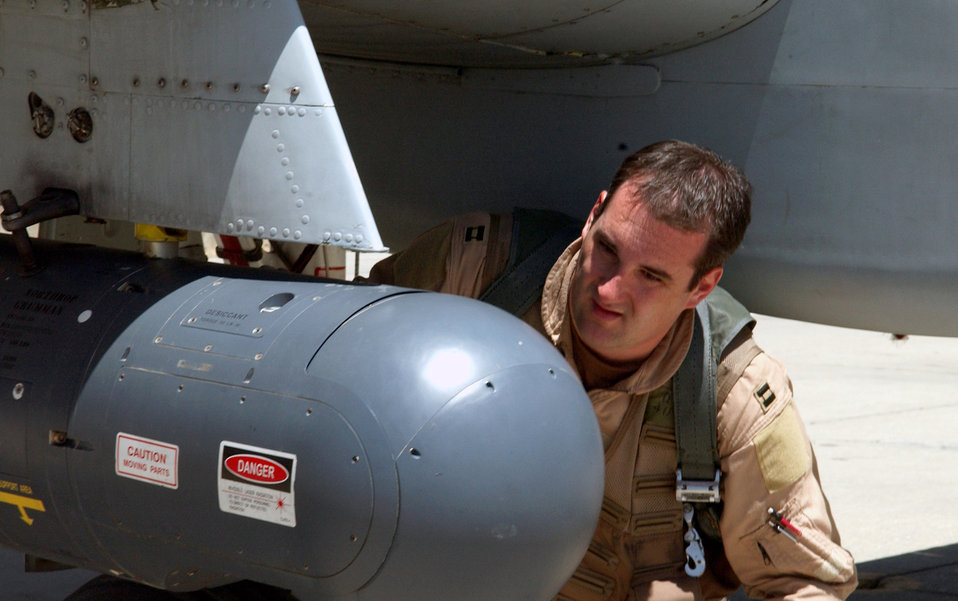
A-10 pods help track bad guys, protect friendly forces

BAGRAM AIR BASE, Afghanistan -- Capt. Keith Wolak checks the Litening precision targeting pod on his A-10 Thunderbolt II before flying a mission from here. He is an A-10 pilot assigned to the 355th Expeditionary Fighter Squadron supporting Operation Enduring Freedom.